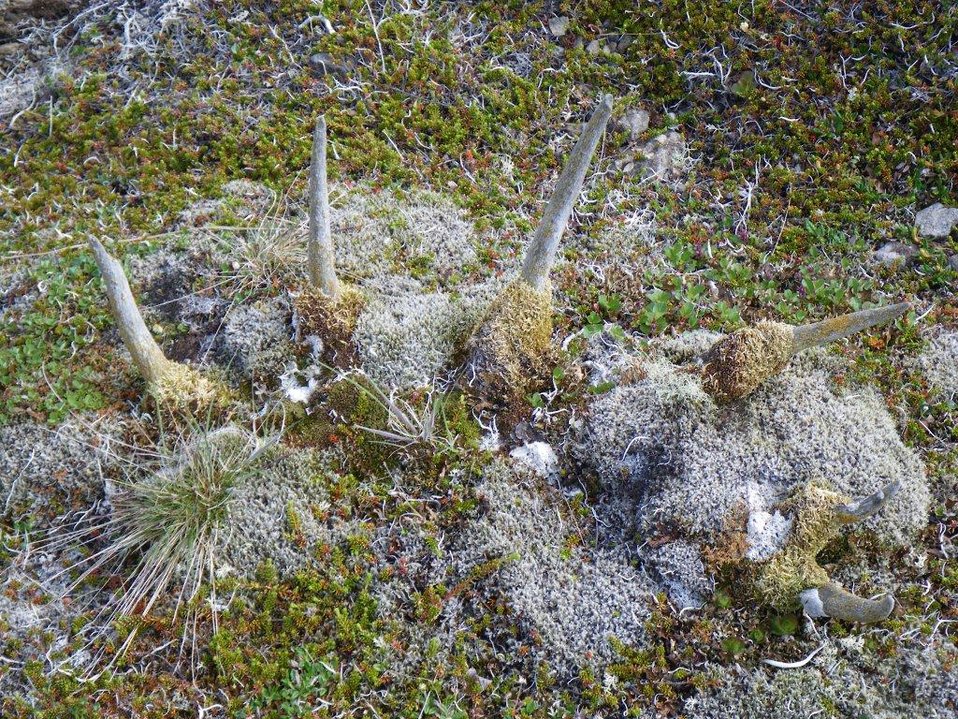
Caribou antlers

Wilderness, Izembek National Wildlife Refuge
Photo by Kristine Sowl,
USFWS, Public Domain